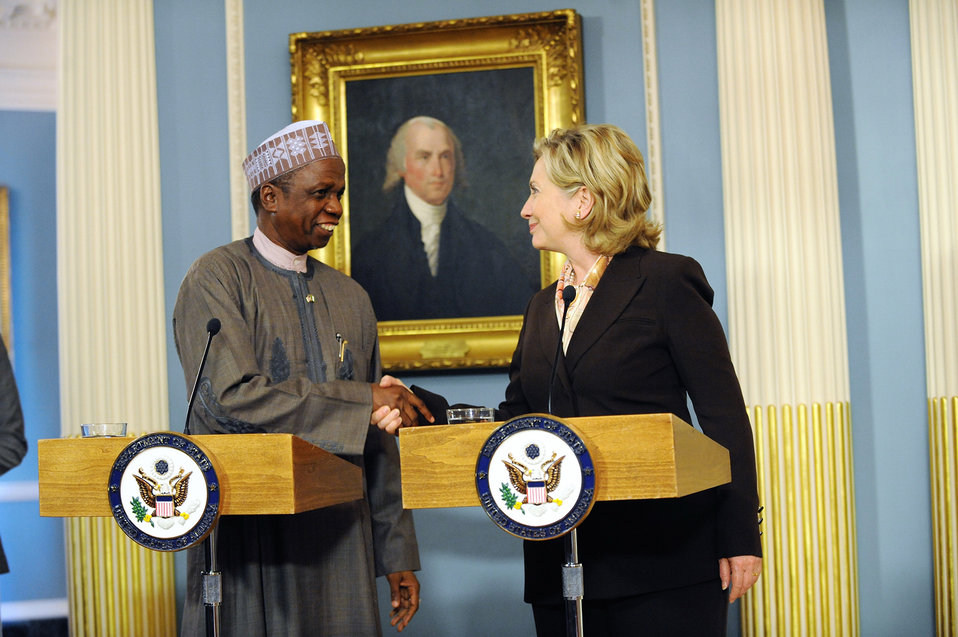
Secretary Clinton Meets With Nigerian Secretary to the Federal Government

U.S. Secretary of State Hillary Rodham Clinton holds a bilateral meeting with Nigerian Secretary to the Federal Government Yayale Ahmed, at the U.S. Department of State in Washington, DC April 6, 2010.